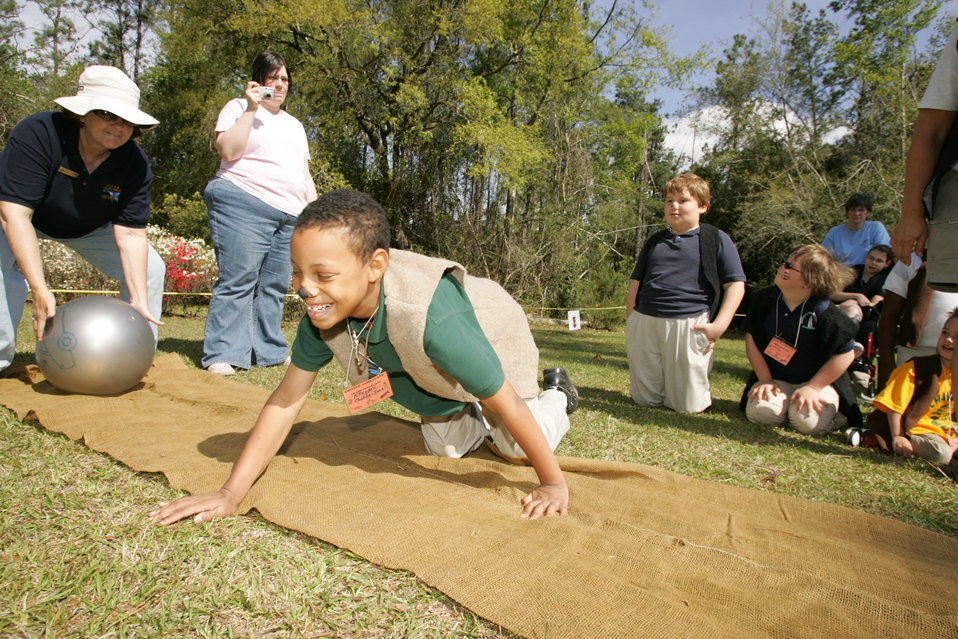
Be the bear.

This student enjoys becoming the bear, even if it's only pretend.